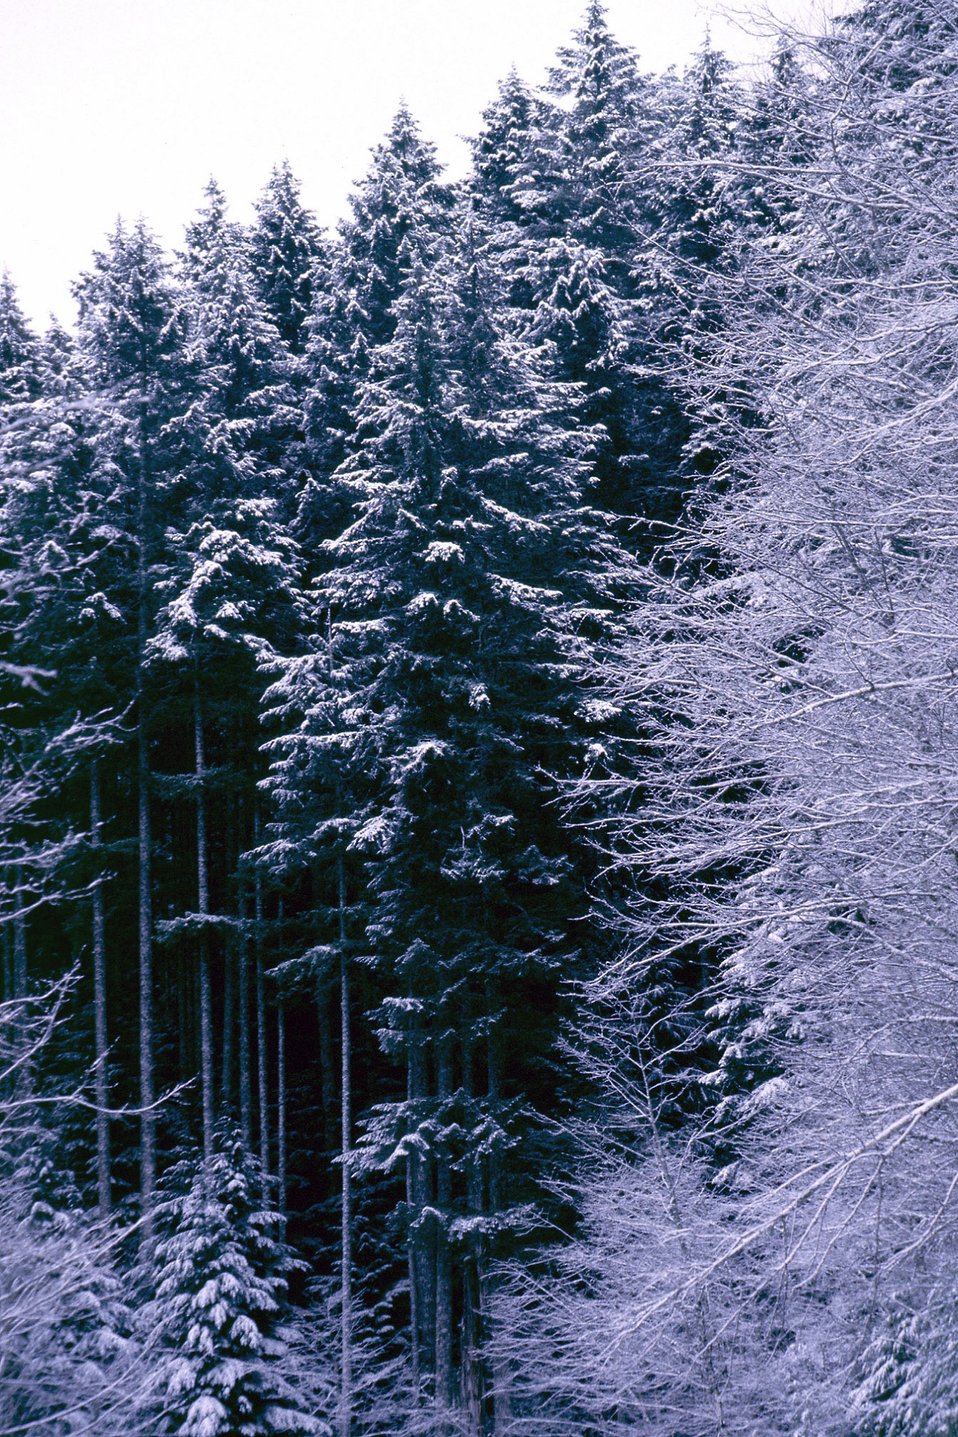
Mid Winter forest scene in the Mollala Corridor.